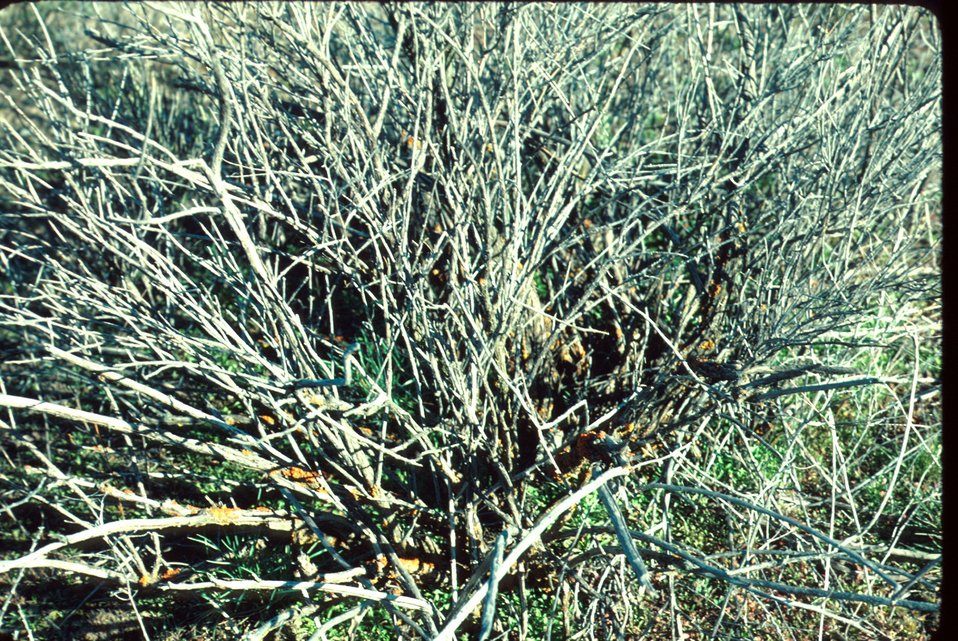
Chrysothamnas nauseous Rabbitbrush Brush